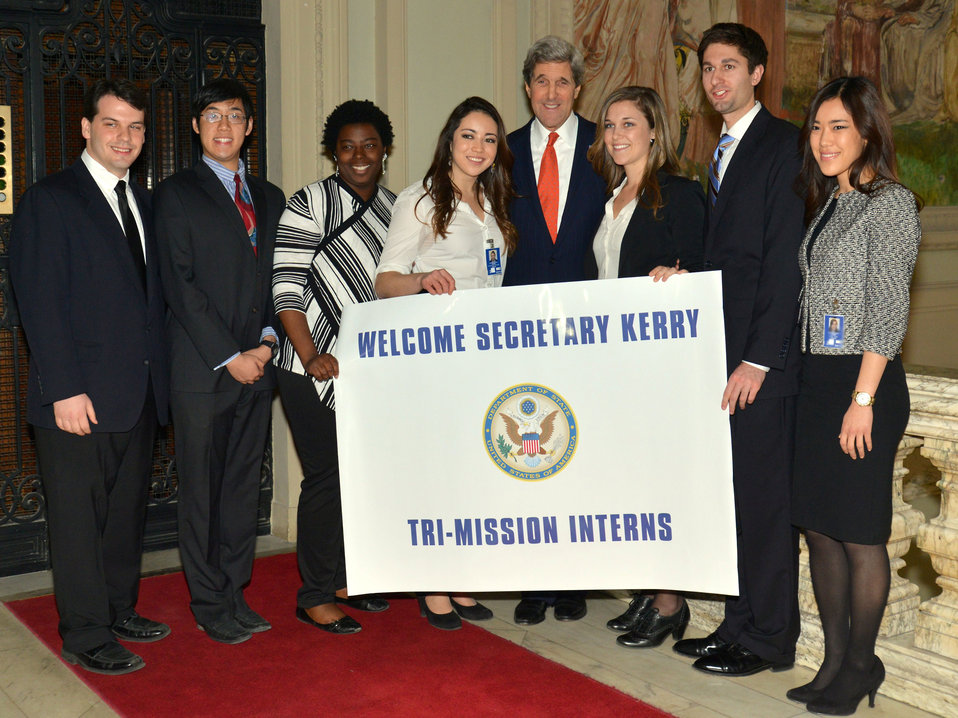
Secretary Kerry Poses for a Photos With Tri-Mission Rome Interns

U.S. Secretary of State John Kerry poses for a photo with interns of Tri-Mission Rome -- the U.S. Embassy in Rome, Italy; the U.S. Embassy to the Holy See; and the U.S. Mission to the UN Agencies -- in Rome, Italy, on February 28, 2013.